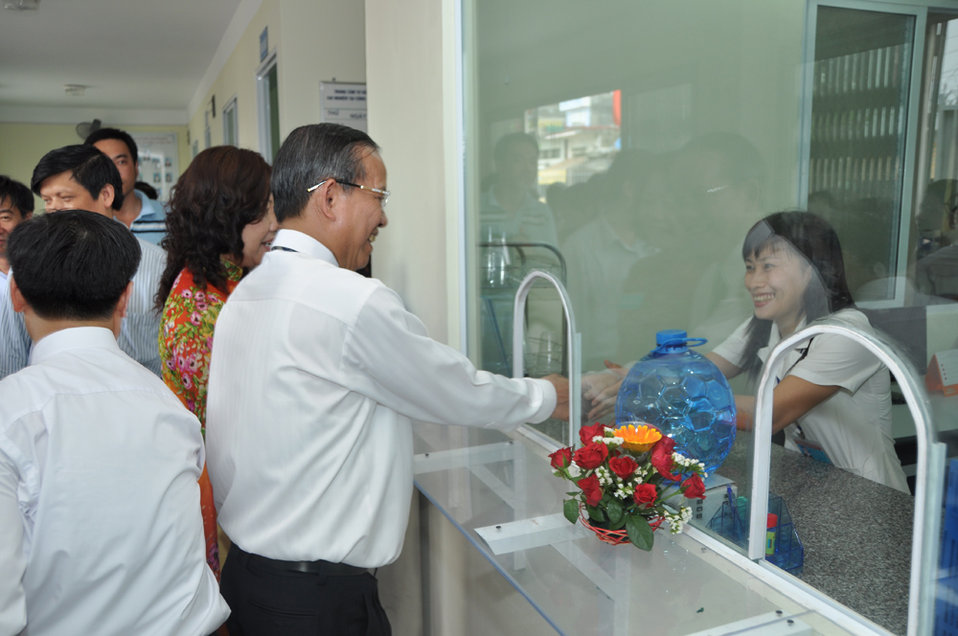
Co-pay Methadone Treatment Center Opens in Hai Phong on June 18, 2011

Deputy Prime Minister Truong Vinh Trong.